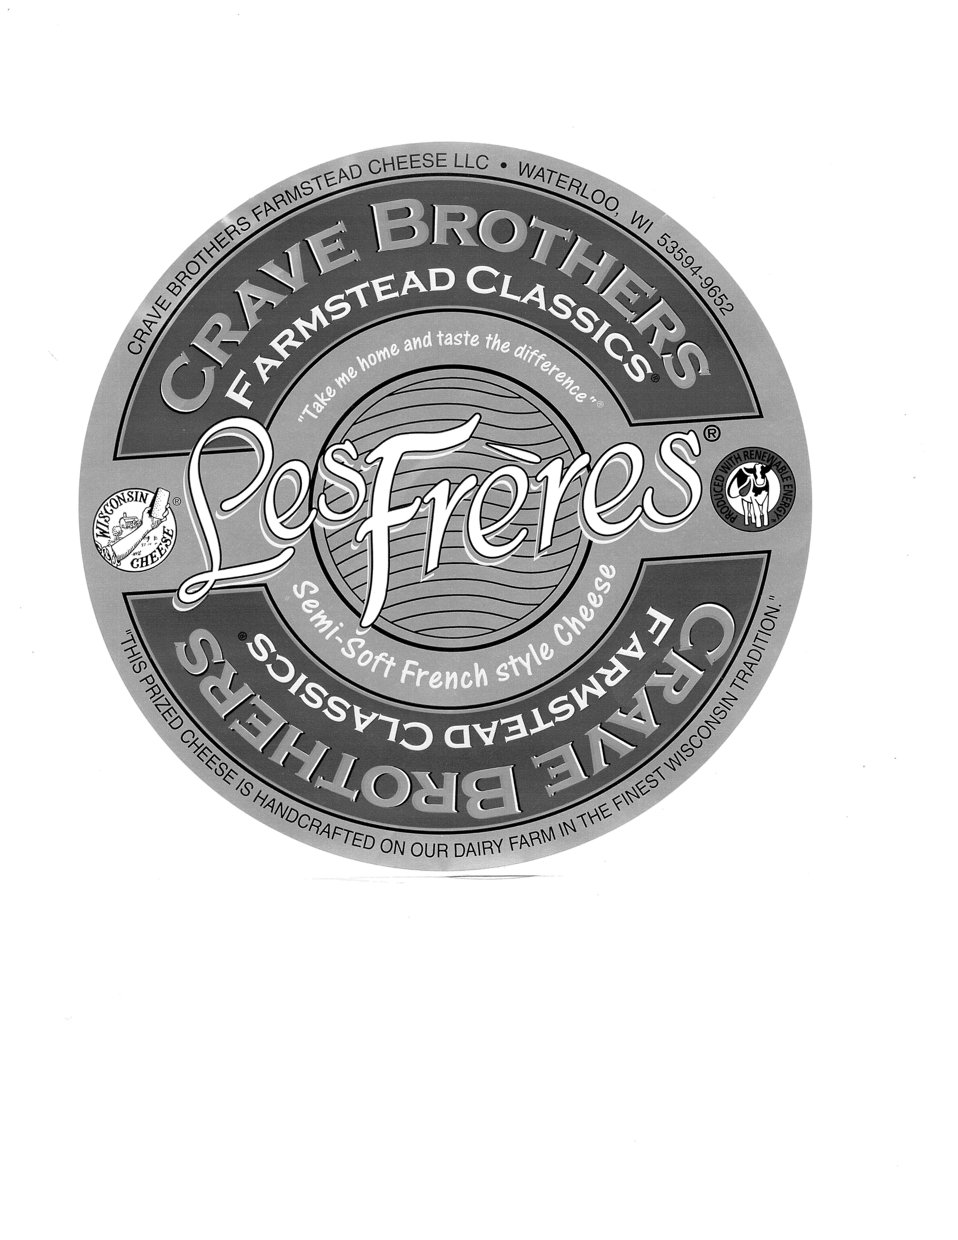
RECALLED – Cheese

July 3, 2013 – Product Recall – Crave Brothers Farmstead Cheese Recalls Les Freres Cheese Products.